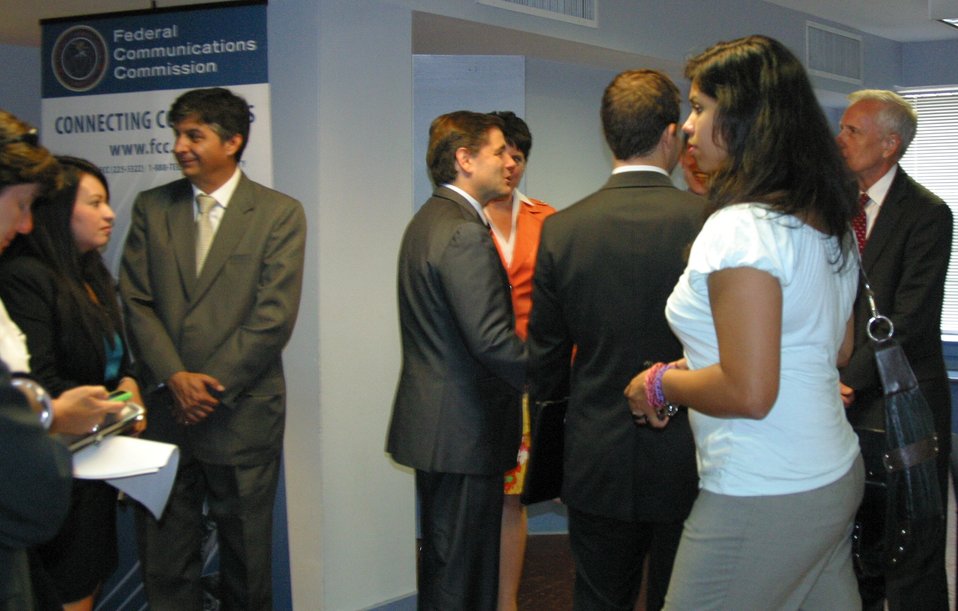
Connect 2 Compete: LULAC 8.7.12

FCC Chairman Julius Genachowski speaking with the crowd post the launch of a nationwide computer recycling and donation effort to support C2C’s efforts to close the digital divide. #PCPledge100